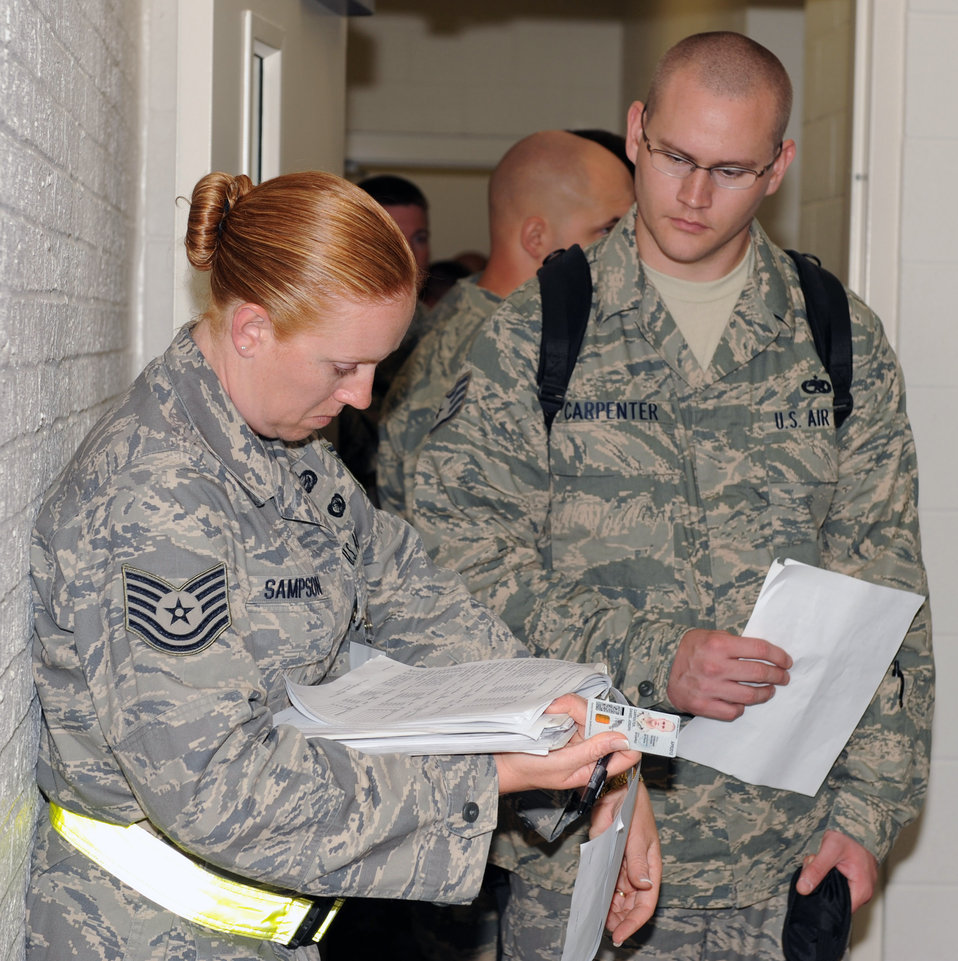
Airmen mobilize to confront Afghan insurgency

Staff Sgt. Daniel Carpenter, 4th Equipment Maintenance Squadron, checks in with Tech. Sgt. Linda Sampson, 4th Force Support Squadron, in the personnel deployment facility at Seymour Johnson Air Force Base, N.C., April 29. Sergeant Carpenter is deploying to Bagram Airfield, Afghanistan, for approximately four months.